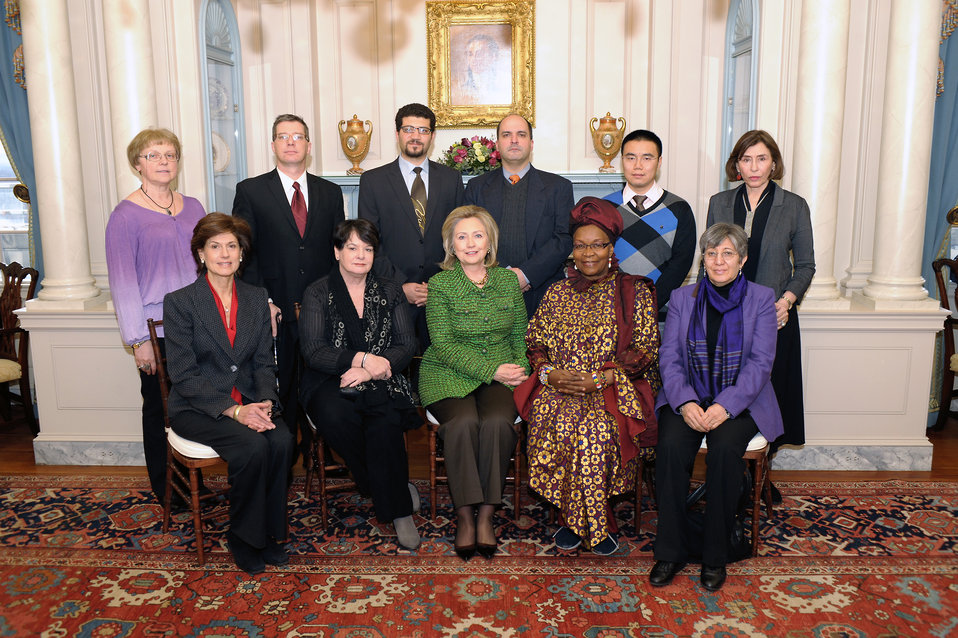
Secretary Clinton Poses for a Photo With Civil Society Activists

U.S. Secretary of State Hillary Rodham Clinton poses for a photo with civil society activists at the U.S. Department of State in Washington, D.C., on February 16, 2011.